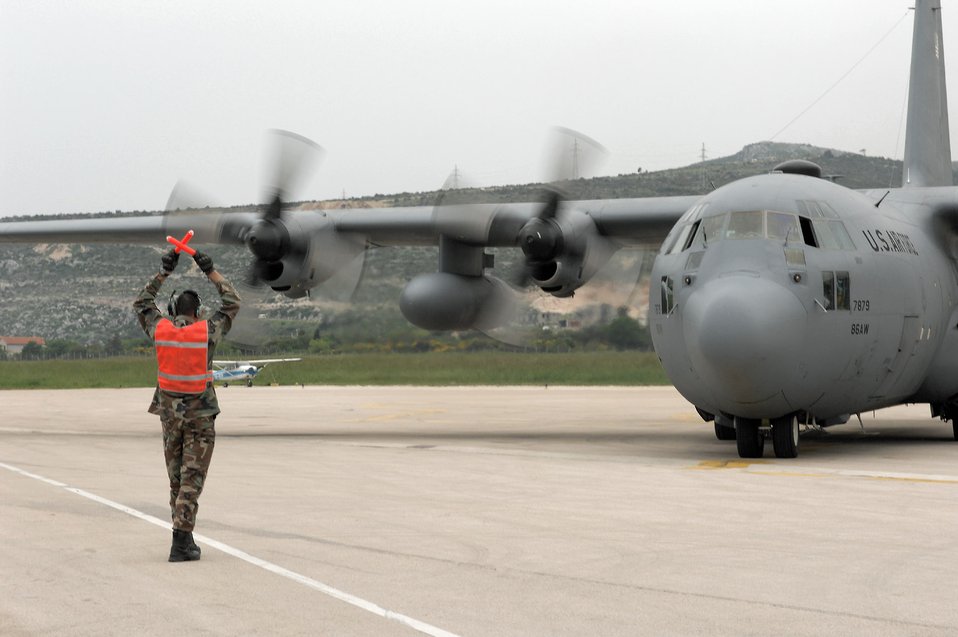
MEDCEUR 08 lands in Croatia, preparations under way

Staff Sgt. Nicholas Panchero marshals in a C-130 Hercules at Divulje Training Base, Croatia, April 29 during the Medical Central and Eastern Europe Exercise 2008. Seventeen nations are participating in the exercise May 2 through 15. The exercise focuses on mass-casualty training scenarios and humanitarian aid in response to crises situations. More than 400 multi-nationals are attending the exercise in support of the Partnership for Peace initiative. Sergeant Panchero is with the contingency response group from Ramstein Air Base, Germany.